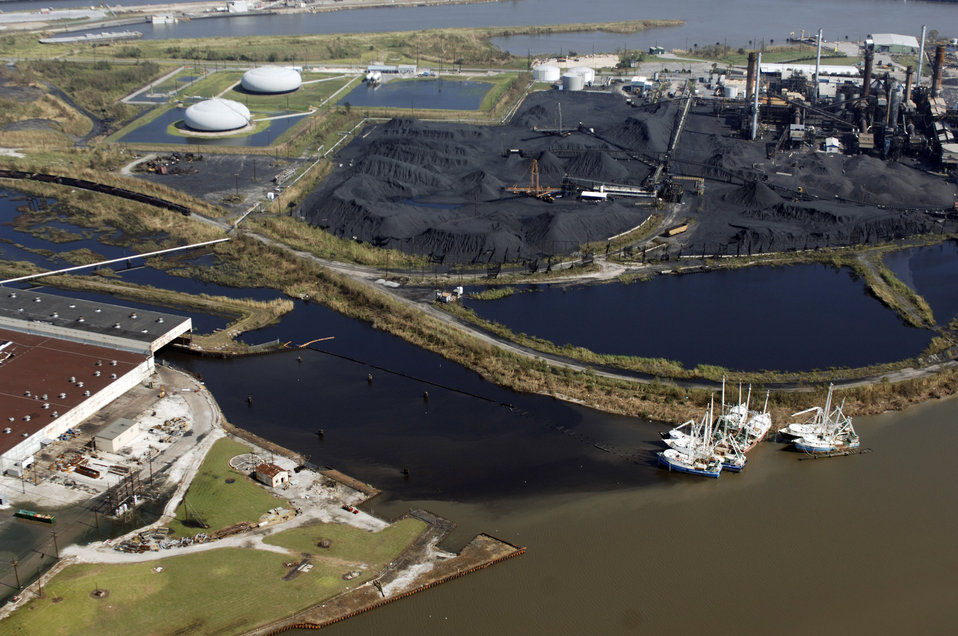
Civil Air Patrol responds

OVER SABINE LAKE, Texas -- During photo reconnaissance missions flown by the Civil Air Patrol, aircrews photograph possible signs of pollution that may have resulted from Hurricane Rita. A refinery on Sabine Lake is photographed and recorded for state and local authorities to assess.